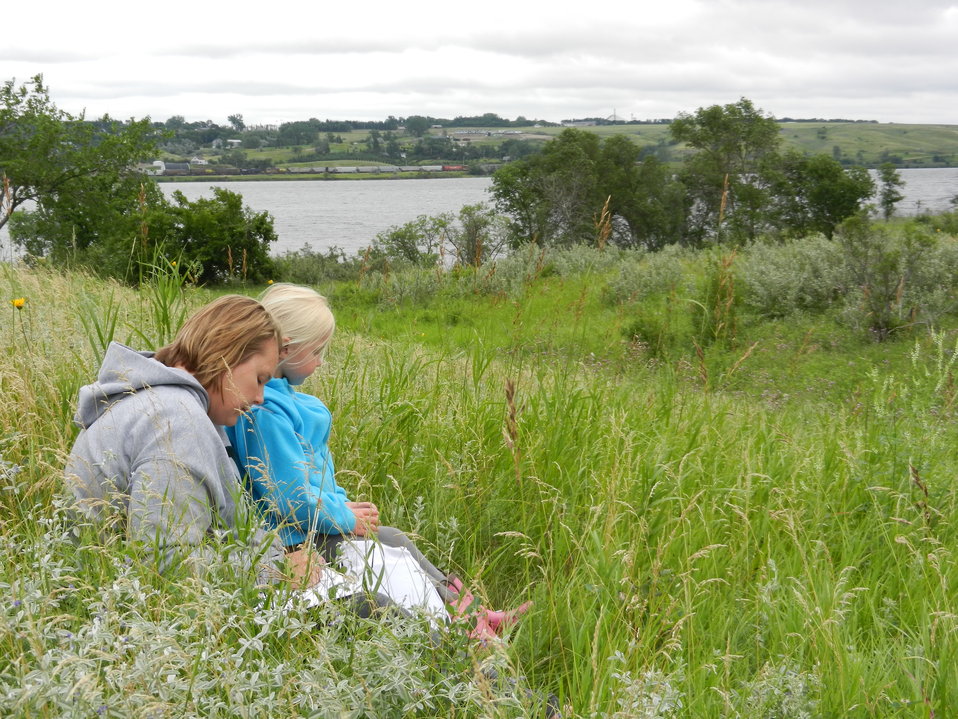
Guided Nature Hike Program

Enjoying the moment -- and recording in their Nature Journal. On July 26, 2011 - Visitors participated in a Guide Nature Hike on Des Lacs National Wildlife Refuge where they learned about the life requirements wildlife need to survive and how the Refuge helps provide them. Participants also learned how to keep a Nature Journal.